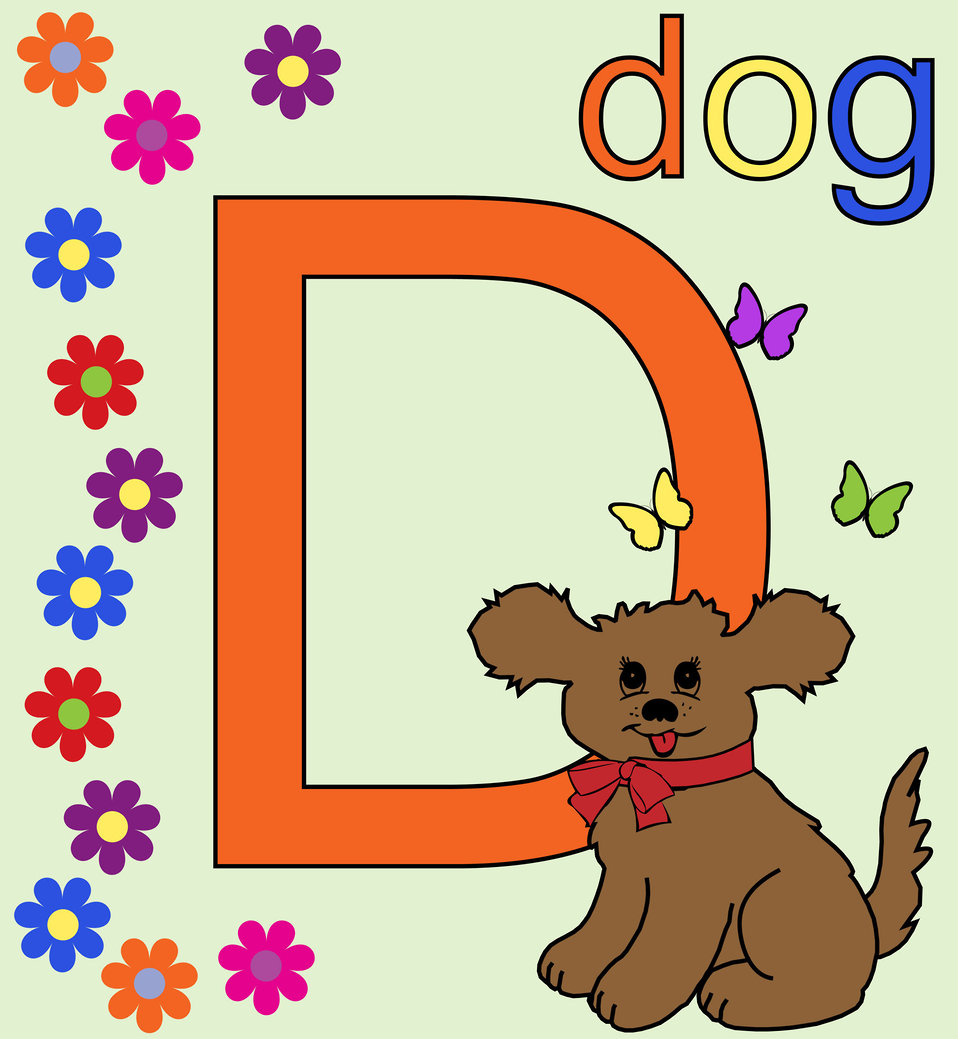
Dog cute letter d

Cute puppy dog alphabet letter d for kids.